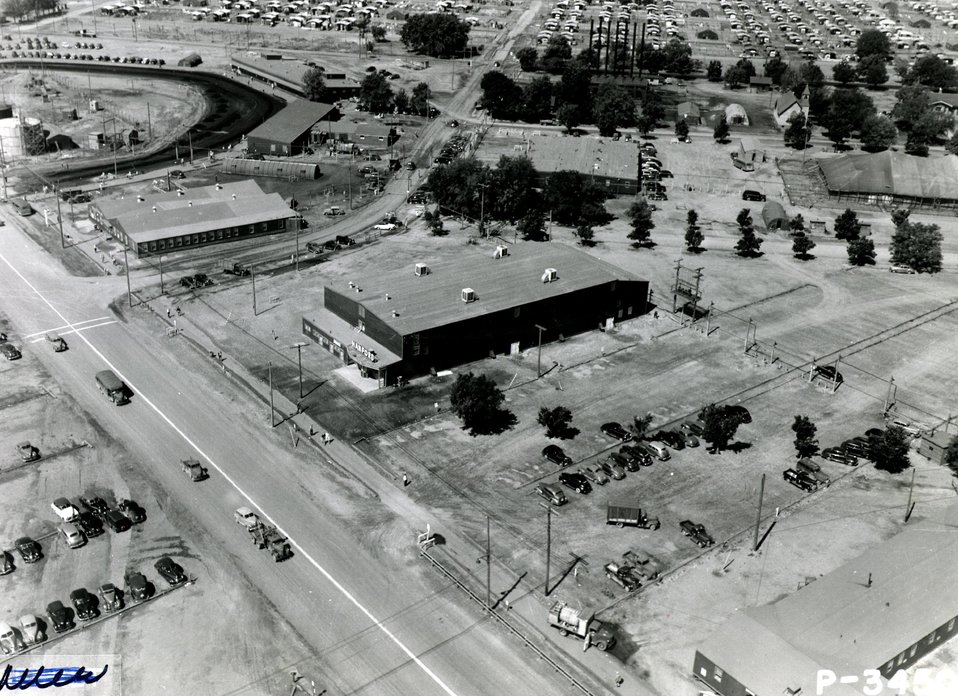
Hanford Auditorium. Circa 1944.